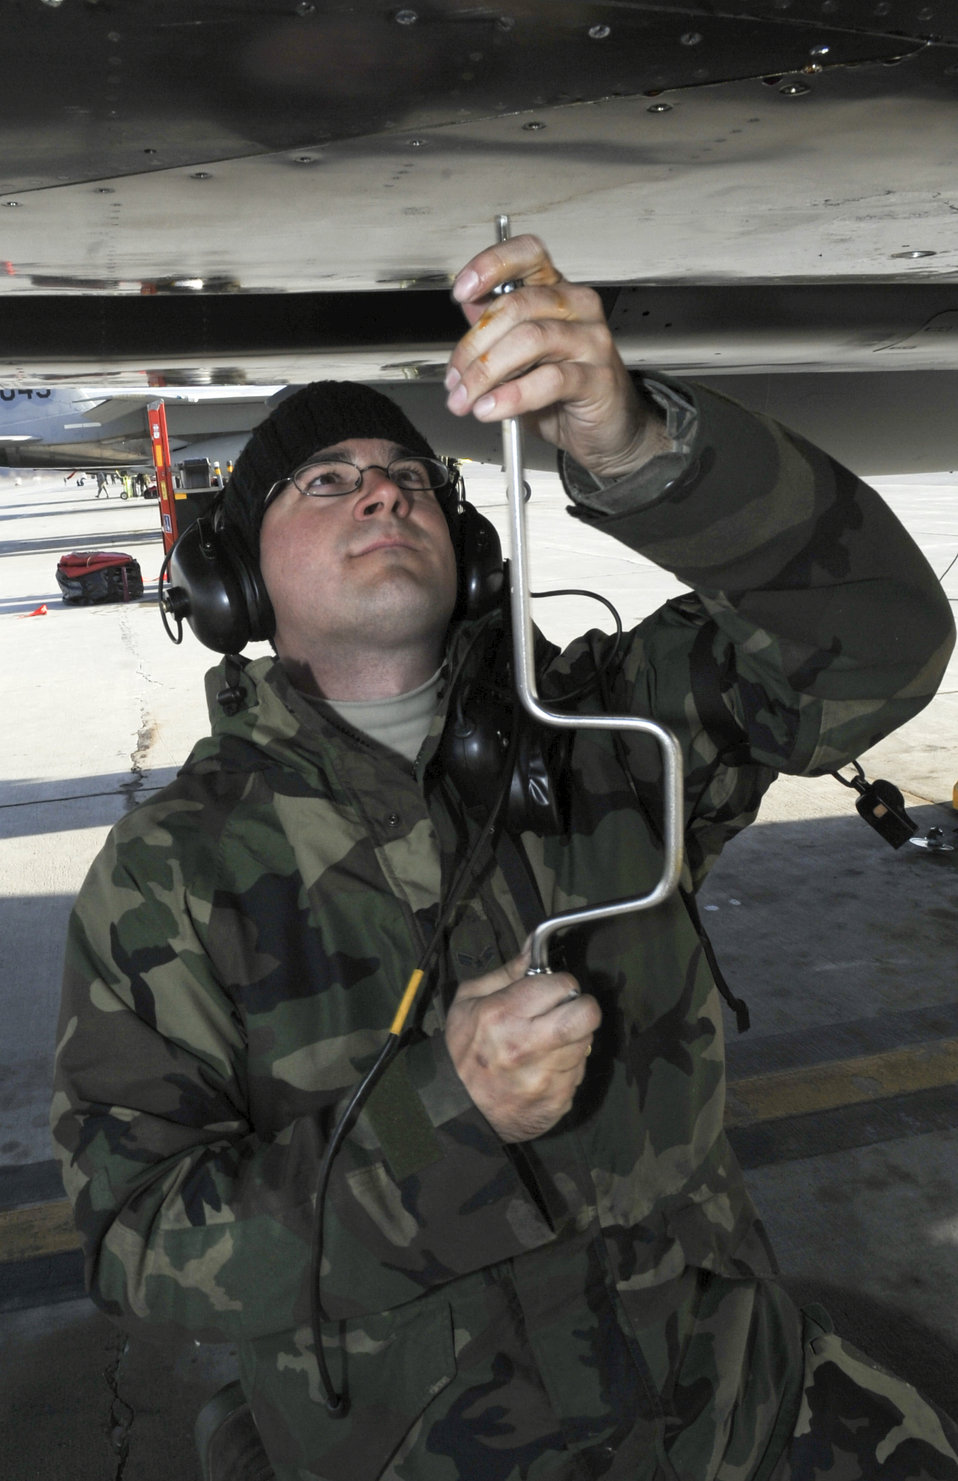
Maintainers keep Red Flag-Alaska jets flying

Airman 1st Class Gabriel Doering completes maintenance on an F-15 Eagle April 28 at Elmendorf Air Force Base, Alaska, prior to its flight during Red Flag-Alaska. The exercise enables flying squadrons to enhance their warfighting capabilities by flying simulated combat sorties in a realistic threat environment. Airman Doering is with the 2nd Aircraft Maintenance Unit at Tyndall AFB, Fla.